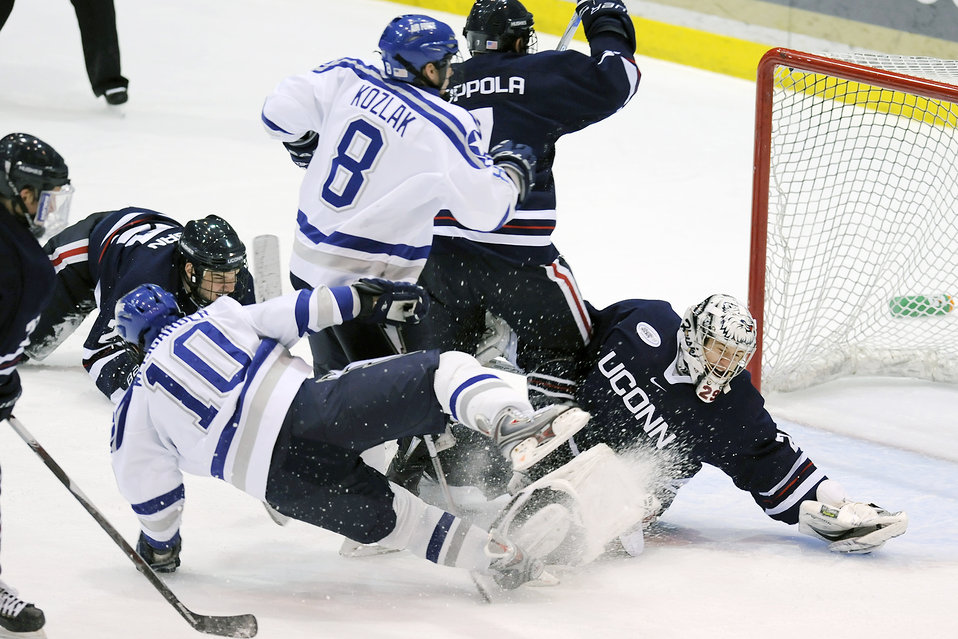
Falcons outskate UConn Huskies

Sophomore Paul Weisgarber and junior Scott Kozlak battle in a flurry in front of the University of Connecticut's net as the Air Force Academy beat UConn 2-1 at the Academy's Cadet Ice Arena Jan. 8, 2010.